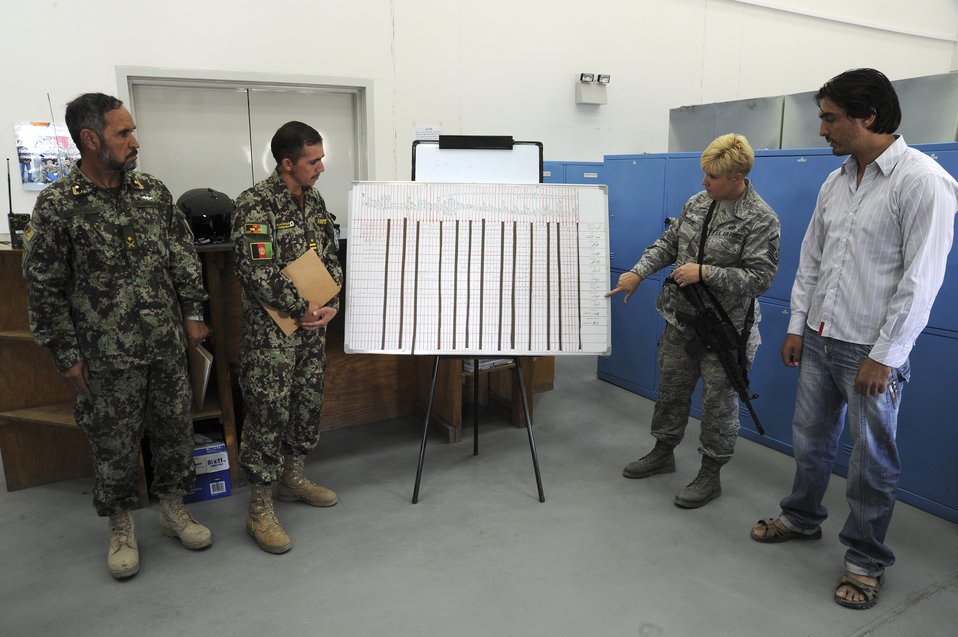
Never stop trying

Master Sgt. Sonya Couture, an Afghan Air Force aviation life support adviser with the 438th Air Expeditionary Wing, discusses a training program with AAF life support section leaders at Kabul International Airport in Kabul, Afghanistan, Sept., 4, 2011.